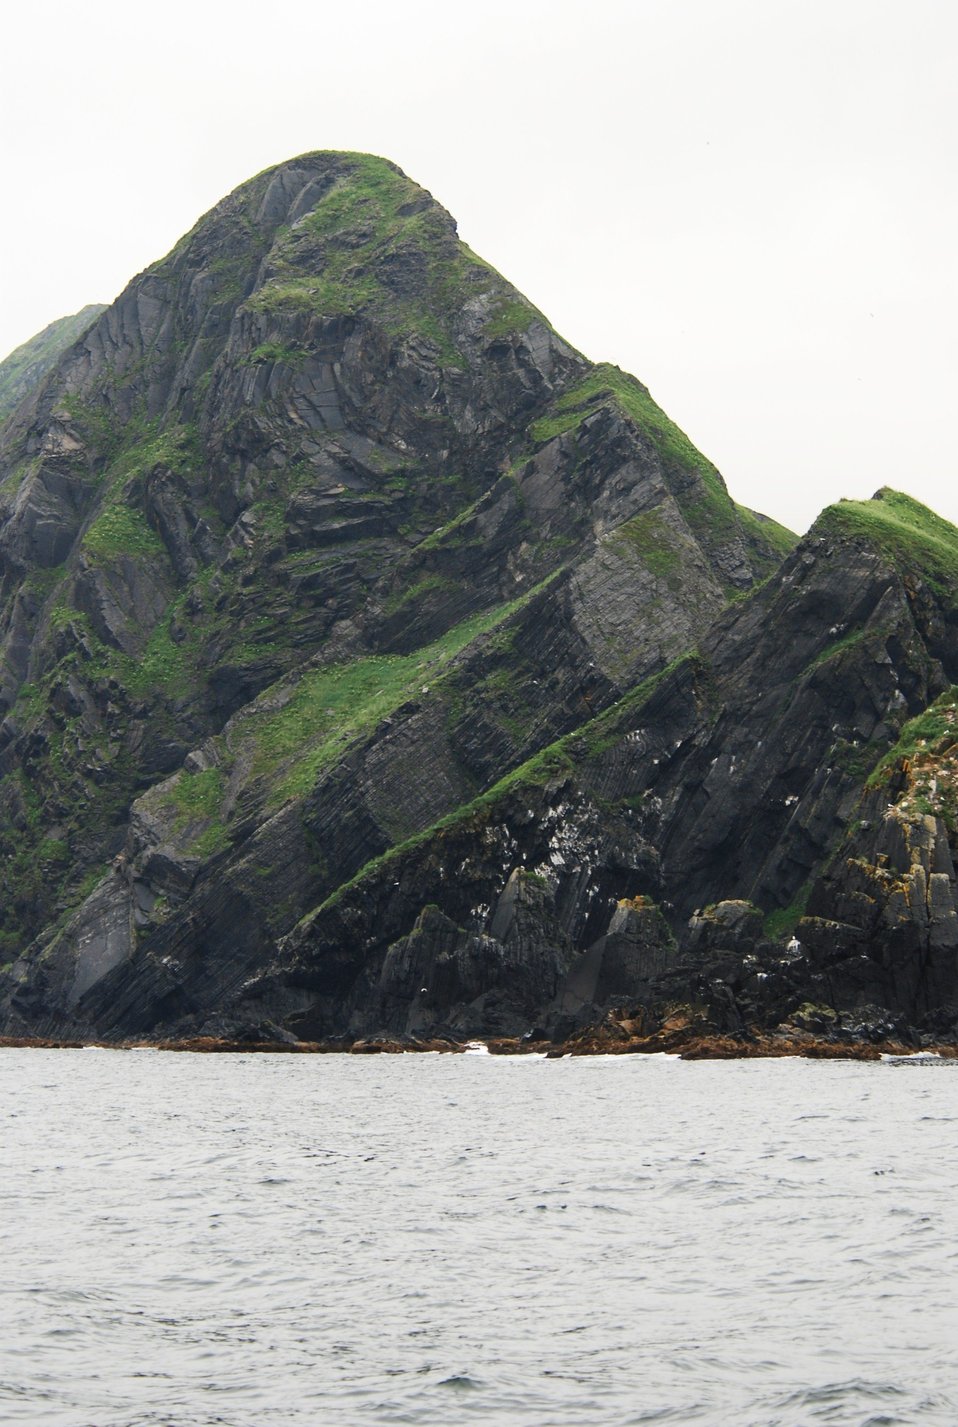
Highly inclined sedimentary beds. These beds are probably uplifted turbidites of Cretaceous age.